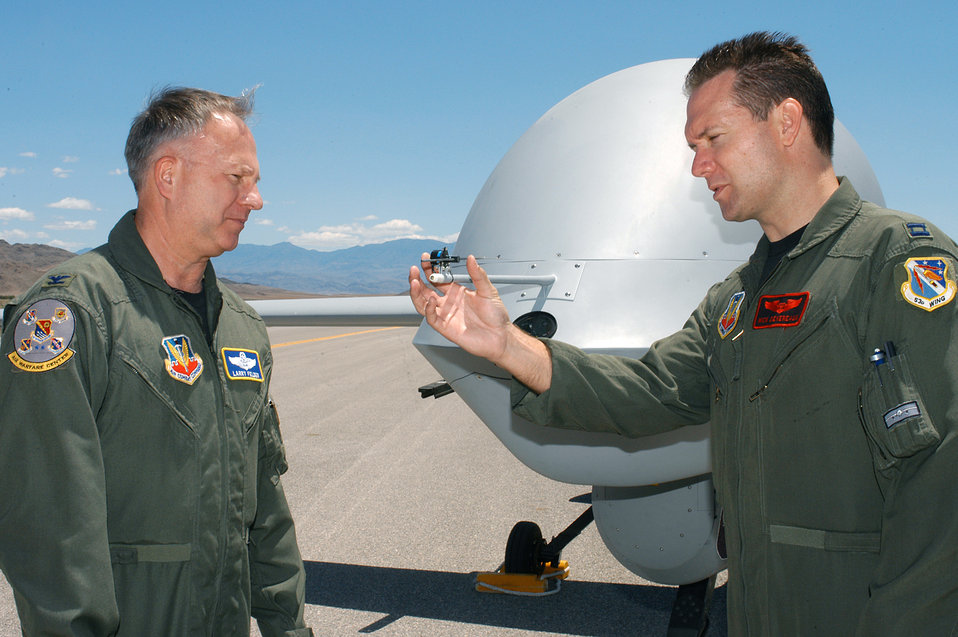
UAV Battlelab stands up at Indian Springs

INDIAN SPRINGS AIR FORCE AUXILIARY FIELD, Nev. -- Col. Larry Felder (left) talks about some of the characteristics of the MQ-1 Predator with Capt. Nick Devereaux. Colonel Felder is commander of the Unmanned Aerial Vehicle Battlelab here, and Captain Devereaux is director of operations for Detachment 4, 53rd Test and Evaluation Group.